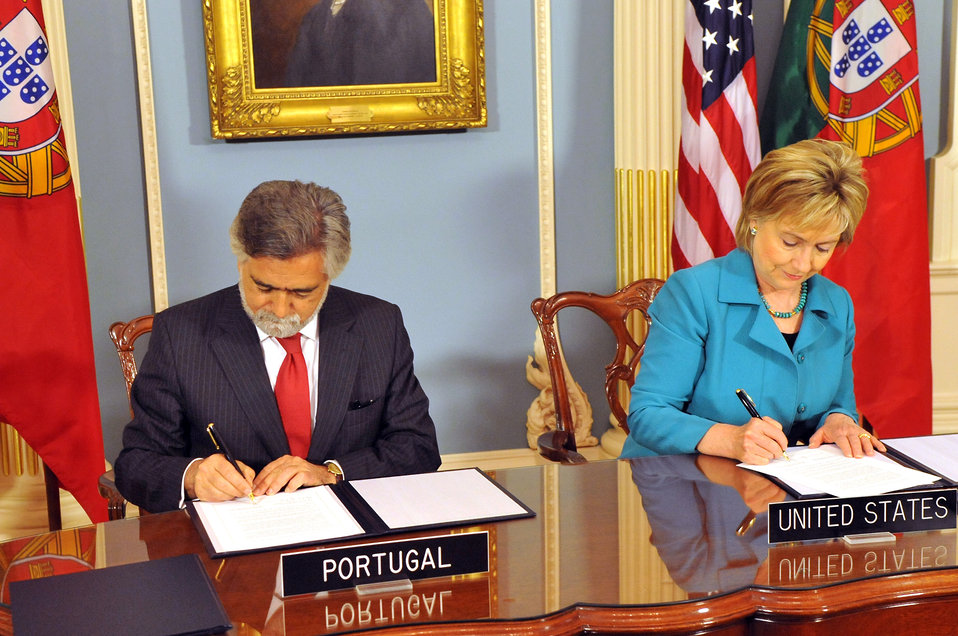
Secretary Clinton With Portuguese Foreign Minister

U.S. Secretary of State Hillary Rodham Clinton meets with Portuguese Foreign Minister Luis Amado at the U.S. Department of State in Washington, DC June 5, 2009.